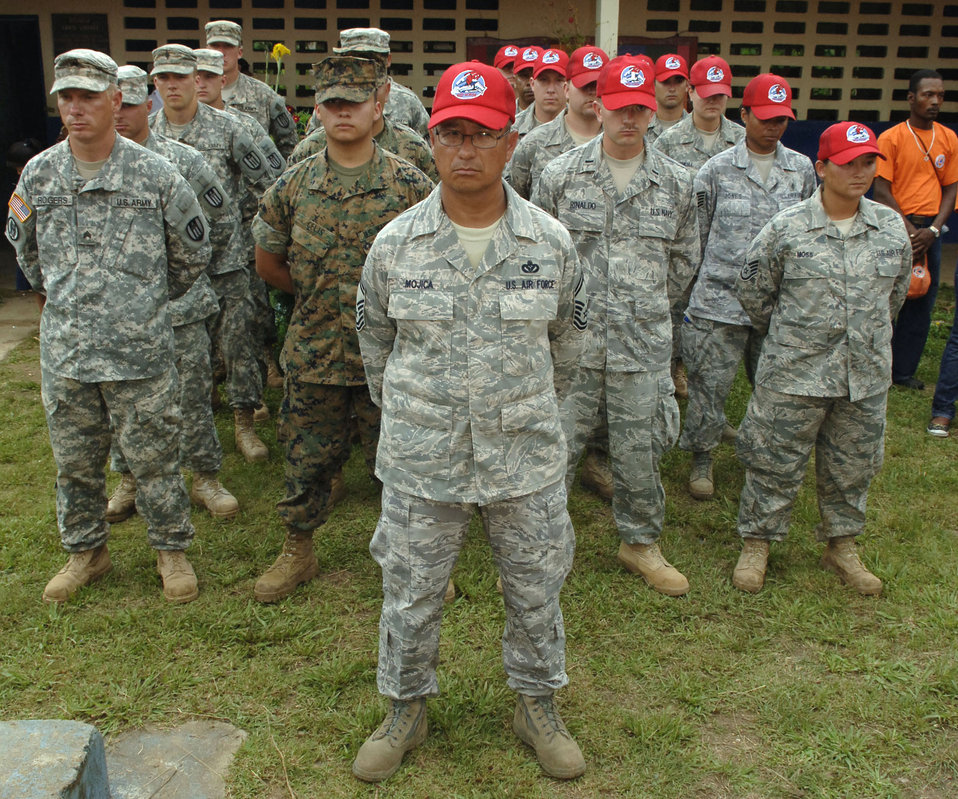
New Horizons opening ceremony echoes spirit of friendship, cooperation

A formation of Soldiers, Sailors, Airmen and Marines stand at parade rest prior to the New Horizons Panama 2010 opening ceremony June 29, 2010, at Santa Librada Elementary School, in Meteti, Panama.